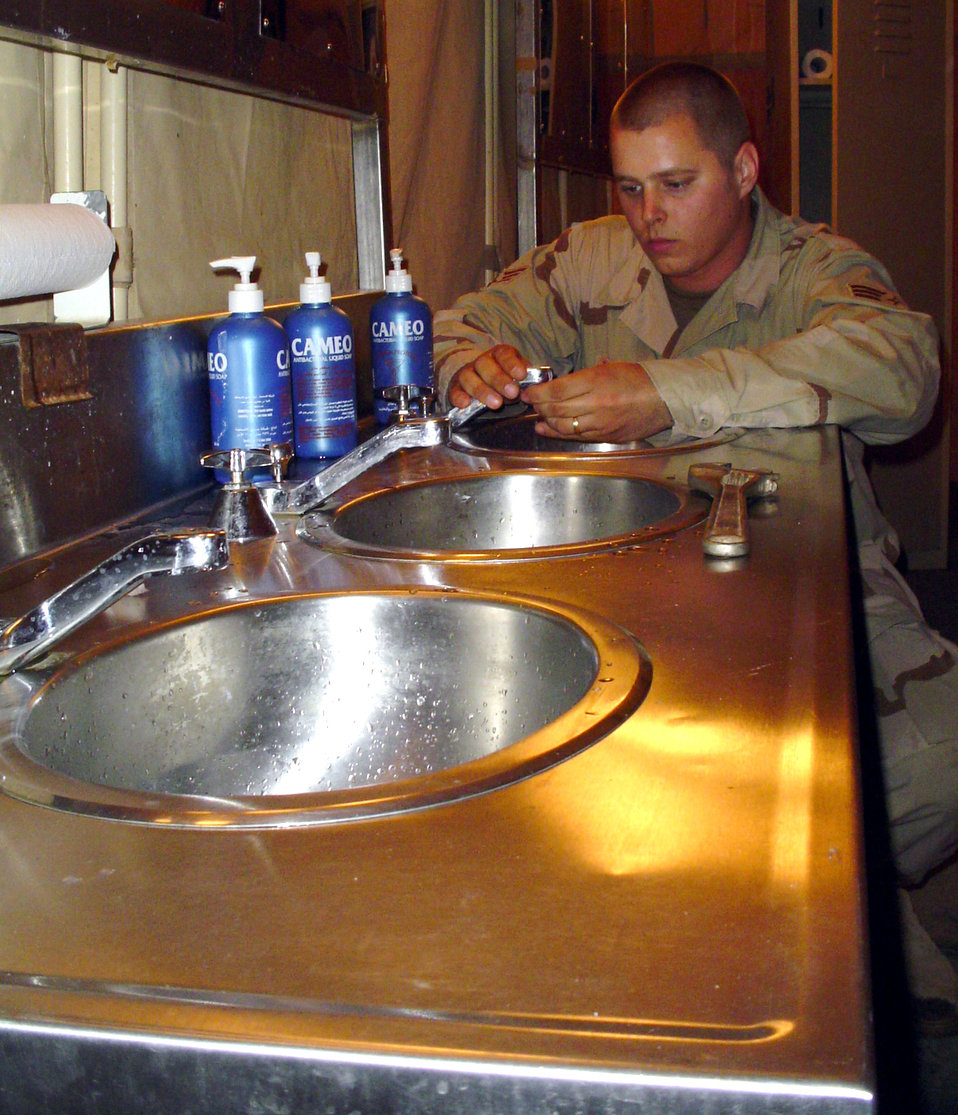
Airmen keep water flowing

BAGHDAD, Iraq -- Senior Airman James Delongchamp repairs a broken faucet in a Camp Sather shower tent. He is assigned to the 447th Expeditionary Civil Engineer Squadron here. Airmen from the 447th ECES utilities shop scour Baghdad International Airport facilities five to six times daily looking for equipment needing repair.